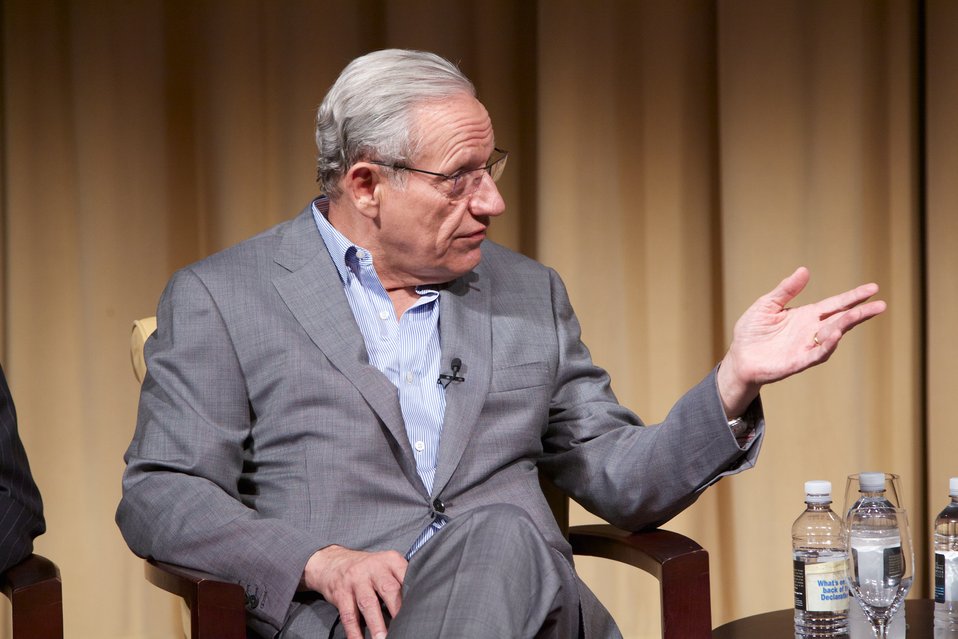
The Role of Congress in International Crises